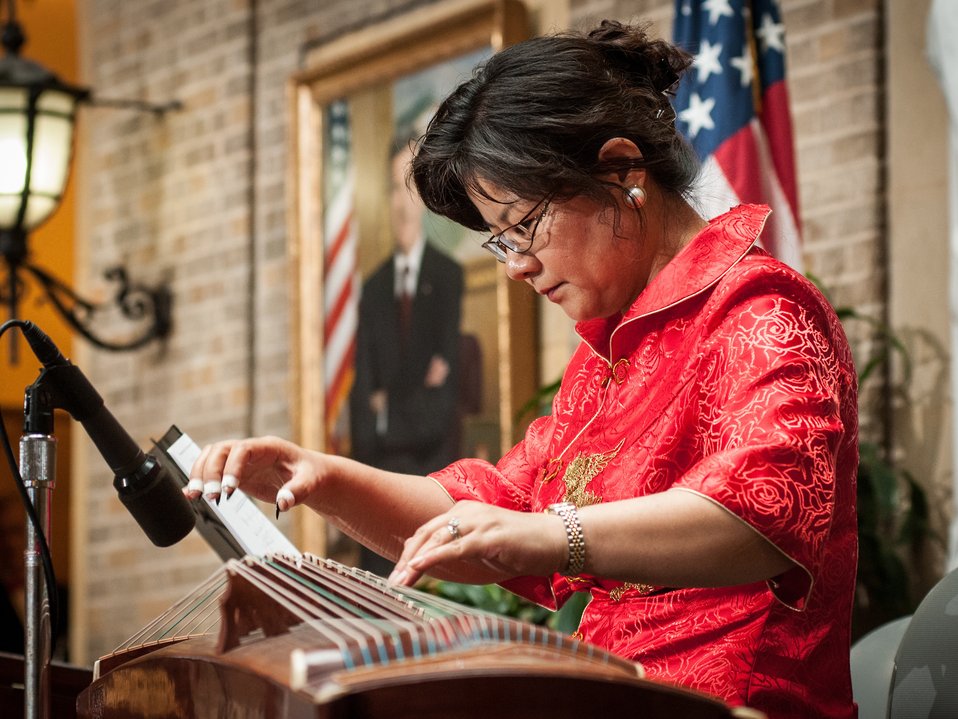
Washington Chinese Traditional Orchestra’s Huilan Chen gives a solo performance of “Gao Shan Liu shui” and “Yi zu Wu qu” on the Guzheng, an ancient type of musical instrument, during the U.S. Department of Agriculture (USDA) Asian Pacific American Heritage Month Observance, at the USDA headquarters, Whitten Building patio, in Washington, D.C., on Thursday, May 23, 2013. This year’s theme is “Building leadership; Embracing the Cultural Values and Inclusions.”